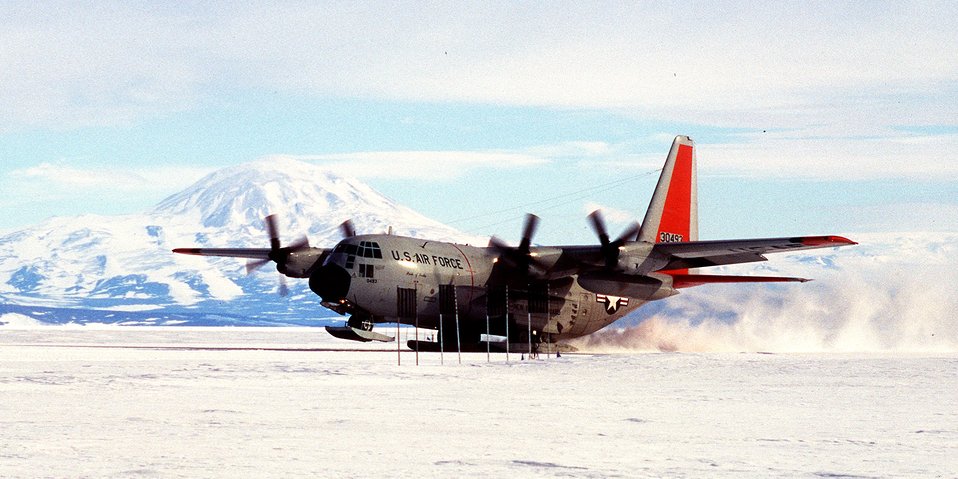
109th Airlift Wing commemorates first South Pole landing

A U.S. Air Force LC-130 Hercules from the New York Air National Guard's 109th Airlift Wing touches down near McMurdo, Antarctica. The first plane landed there 50 years ago.